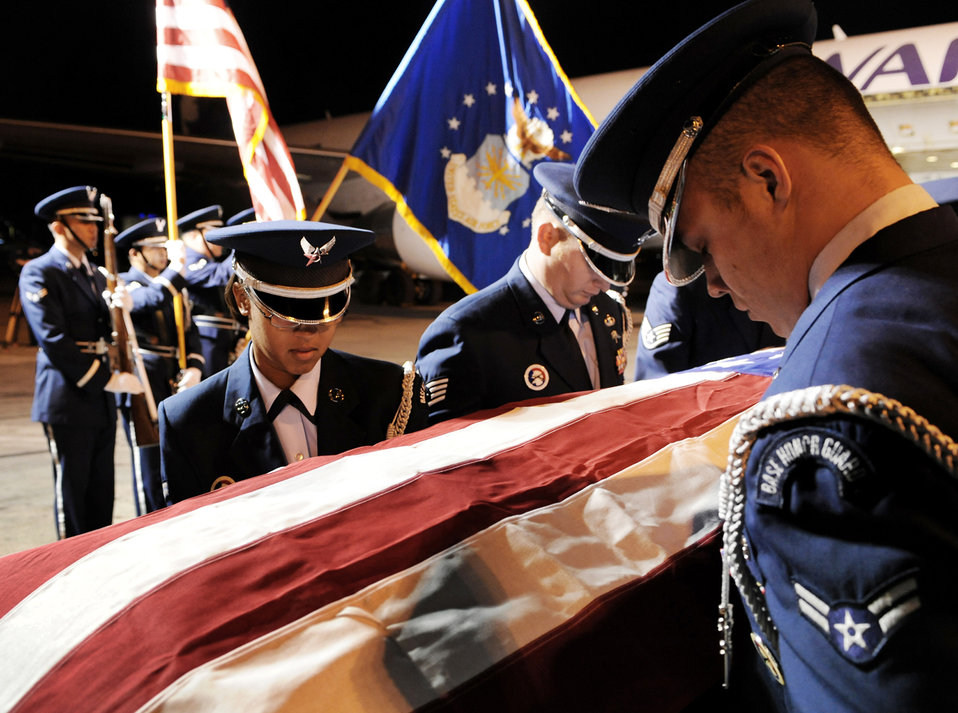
Returned with honor

The Nellis Air Force Base, Nev., Honor Guard provides a dignified transfer for the remains of Maj. Russell C. Goodman on the flightline at McCarran International Airport in Las Vegas, Jan. 12, 2010. Major Goodman was shot down over North Vietnam in February 1967.